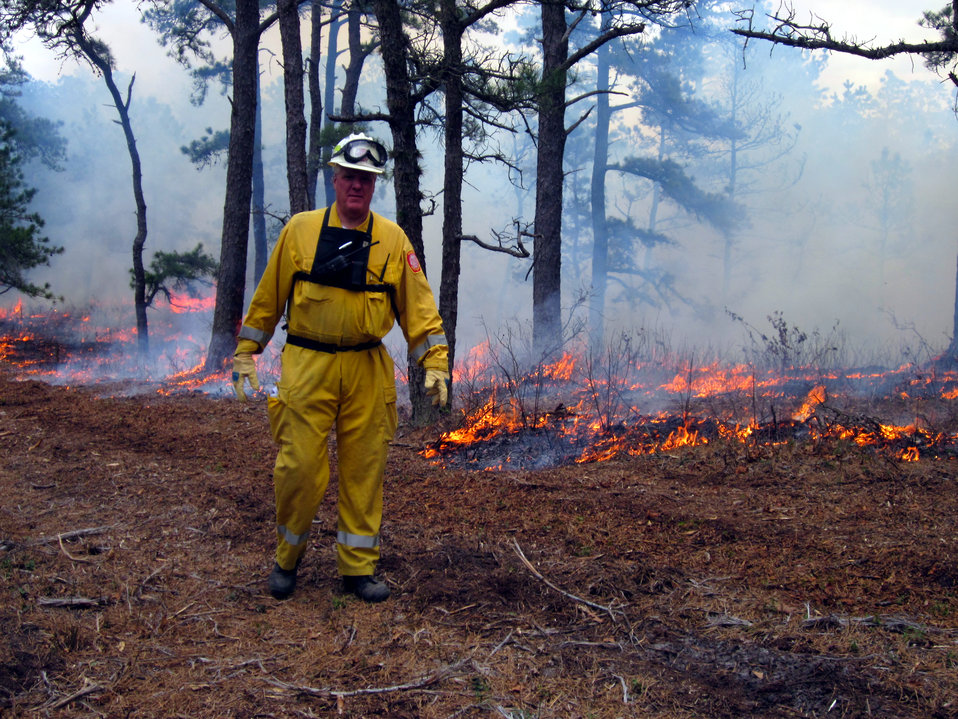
Chief Baker Walks the Line

Mashpee, Massachusetts, April 5, 2012. George Baker, Chief of the Town of Mashpee, Massachusetts Fire Department, walks along the west flank of controlled burn at the Town of Mashpee Holland Hill Barrens area of Mashpee National Wildlife Refuge. The burn reduced fire risk to neighboring homes and improved habitat for the New England cottontail. It was conducted by the Town of Mashpee, U.S. Fish and Wildlife Service, State of Massachusetts Department of Conservation and Recreation, and Northeast Forest and Fire Management.